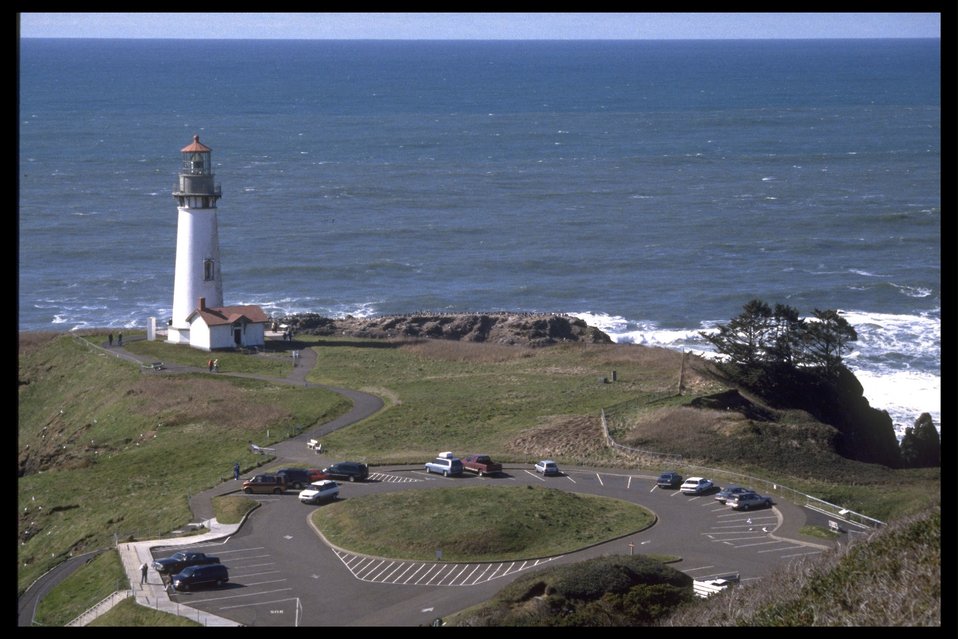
Yaquina Head Lighthouse.